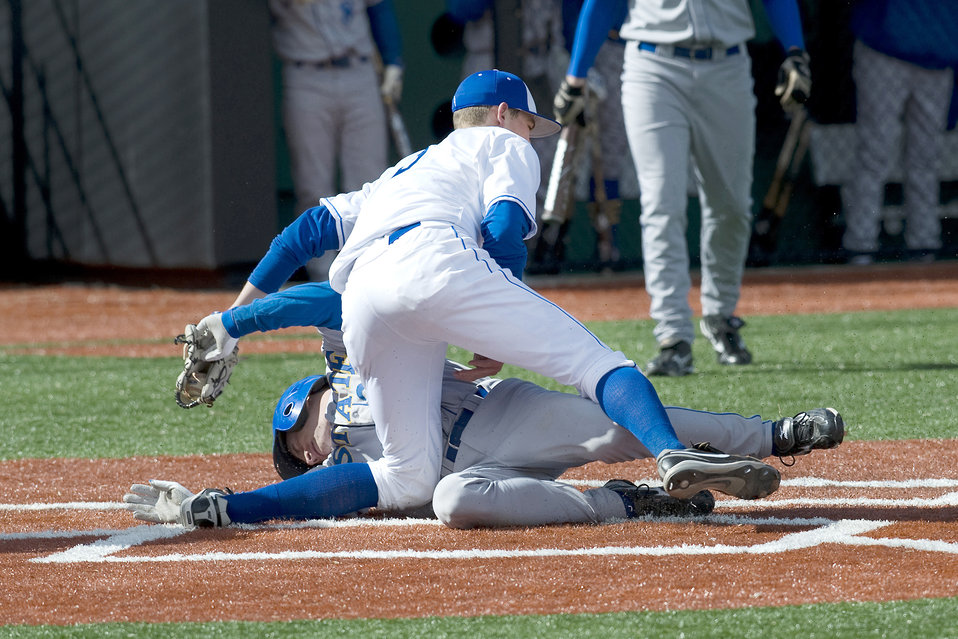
Falcons defeat South Dakota State

Air Force senior pitcher Alex Truesdale makes the tag at home plate as the Falcons defeated South Dakota State 12-11 at the U.S. Air Force Academy's Falcon Field in Colorado March 5, 2010.